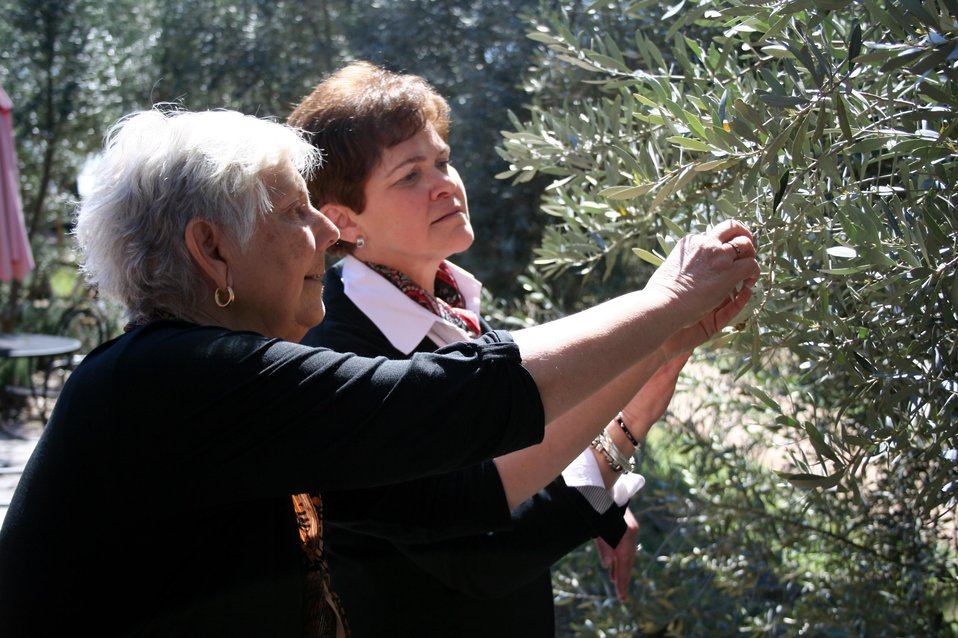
Agriculture Deputy Secretary Krysta Harden looks over olive blooms with Sandy Oaks Olive Orchard owner Sandy Winokur in Elemendorf TX on Friday, Feb. 28, 2014.